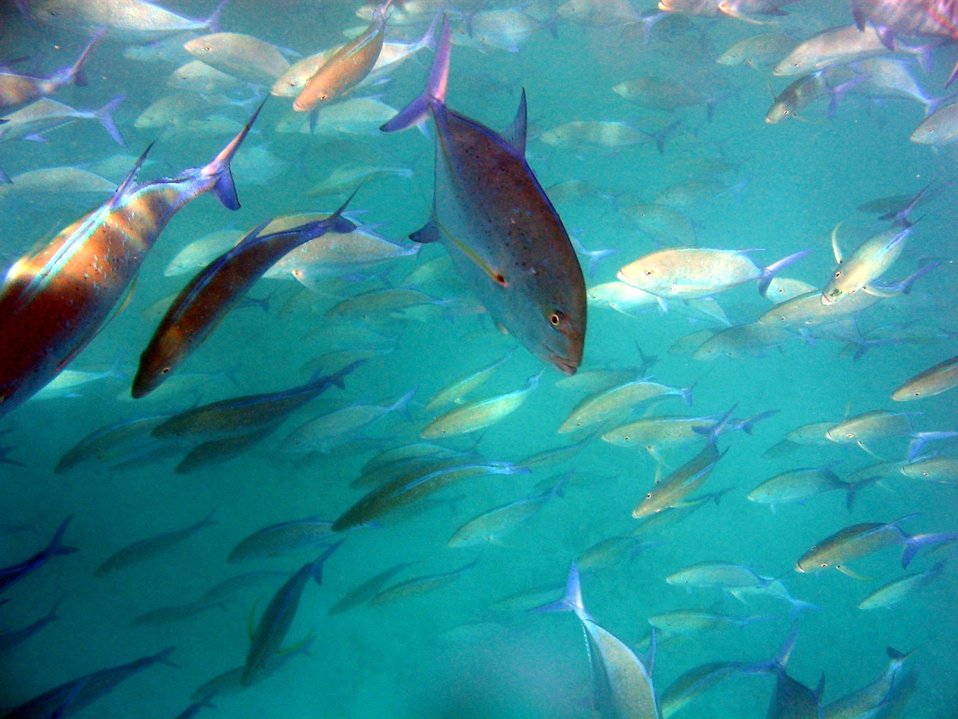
A melange of omilu or bluefin trevally ( Caranx melampygus, Cuvier 1833).